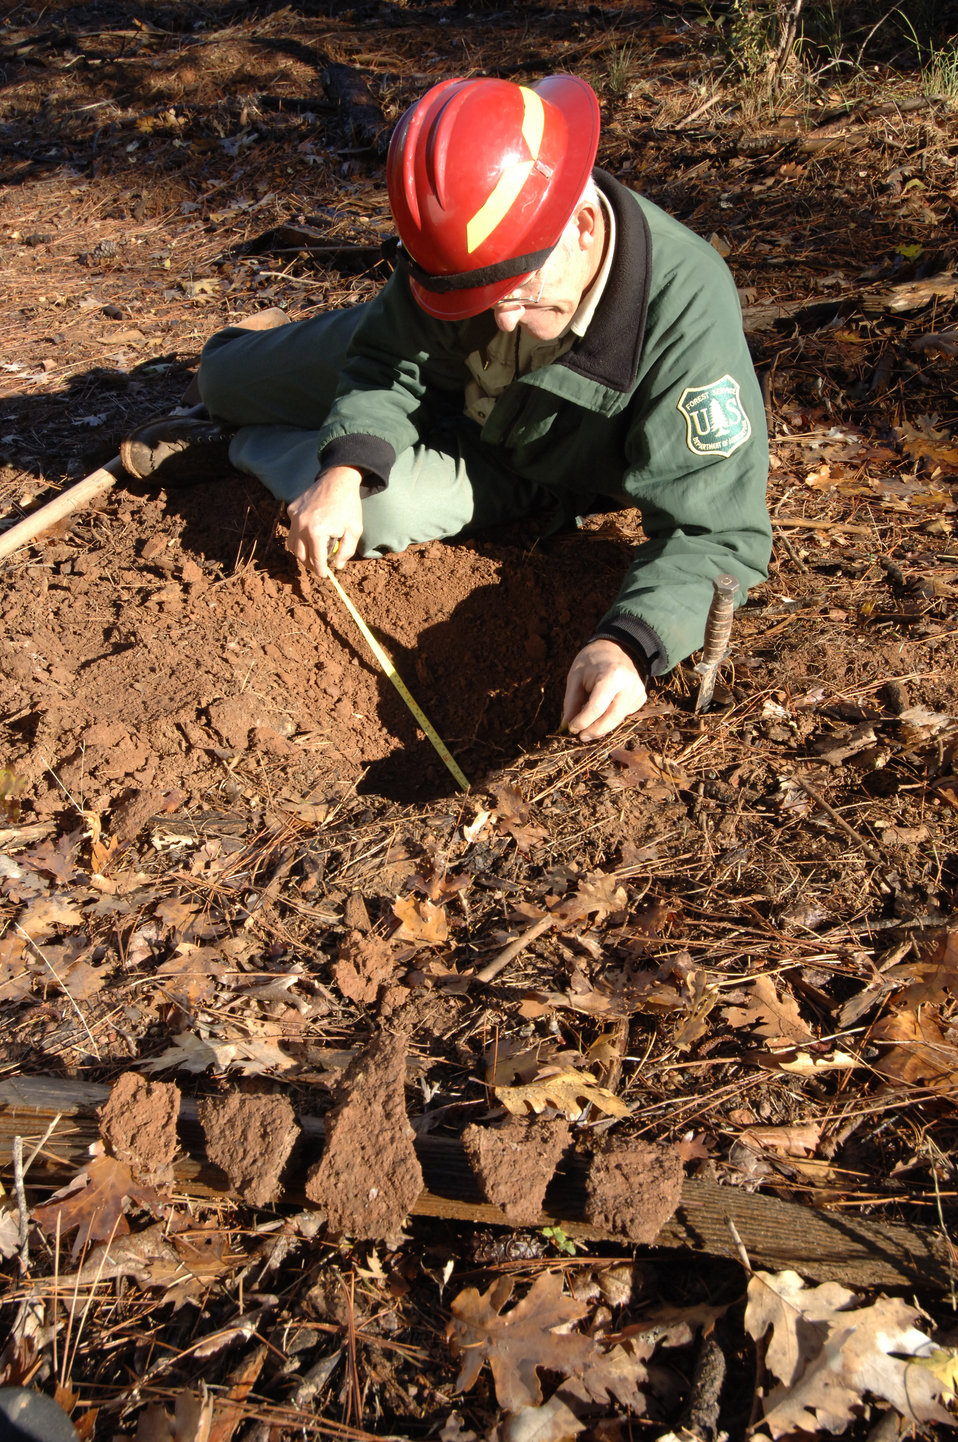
U.S. Forest Service soil scientist Brad Rust conducts evaluations for surface soil texture and soil compaction for the Shasta-Trinity National Forest in California on November 17, 2007. The Forest Service considers the sustainable production of natural resources and the maintenance of soil and water quality high priorities as it plans and implements management activities. Forest Service regions developed soil quality standards and implemented direction or guidance relating to maintenance and protection of soil productivity.